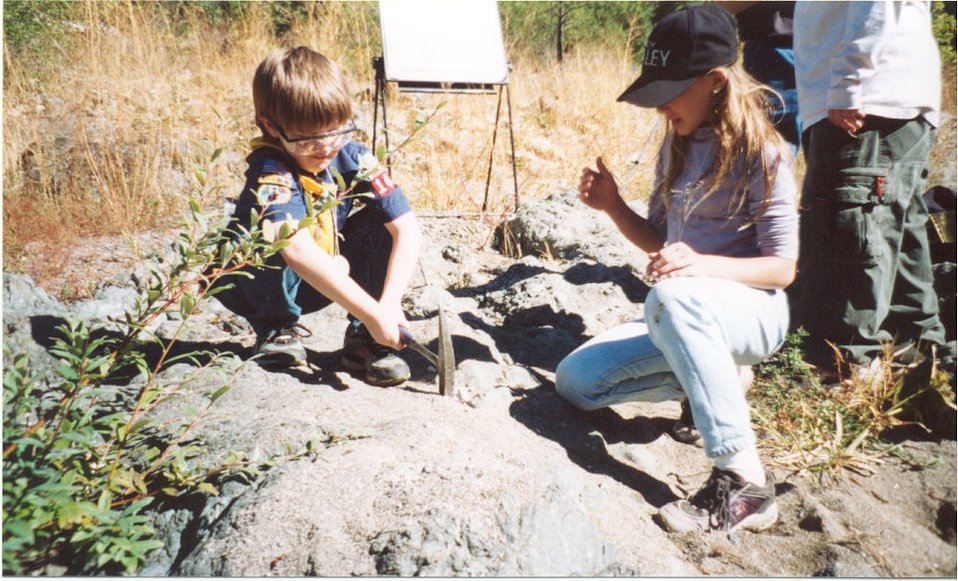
Public Lands Day two volunteers looking at geodes.